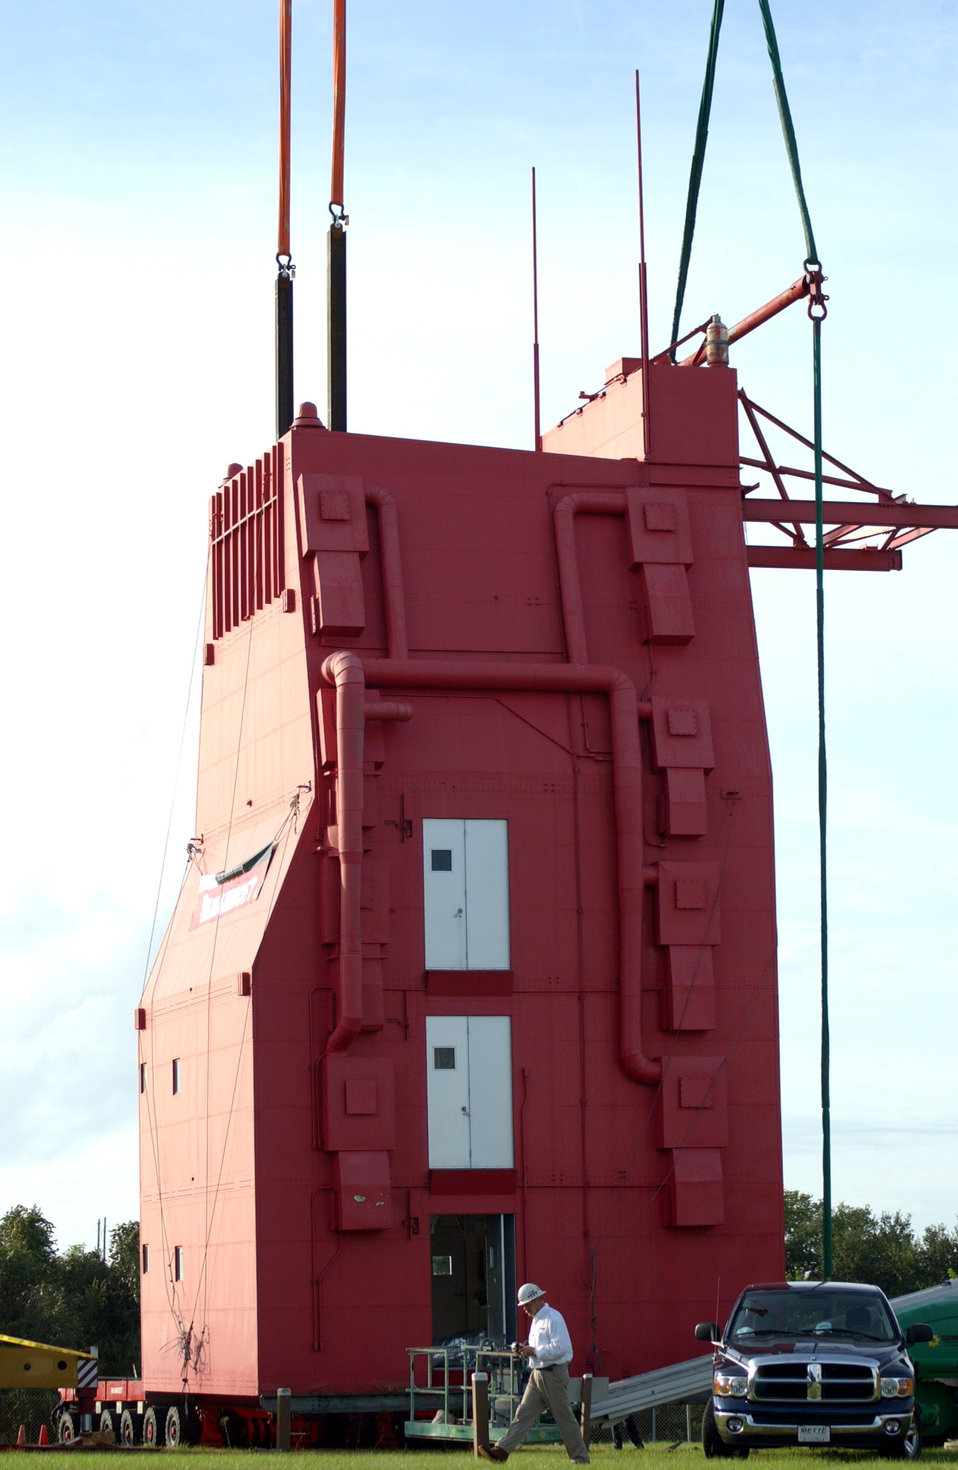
Complex 19 White Room

CAPE CANAVERAL AIR FORCE STATION, Fla. (AFPN) -- The historic Complex 19 White Room here was relocated to its new home in the outdoor Rocket Garden at the nearby Air Force Space and Missile Museum. The structure was lifted by two 165-ton cranes and placed on two self-propelled low-profile crawlers, which moved the room 1,800 linear feet. The White Room, 56 feet tall and weighing 46 tons, was used by Gemini astronauts during missions in the mid-1960s.